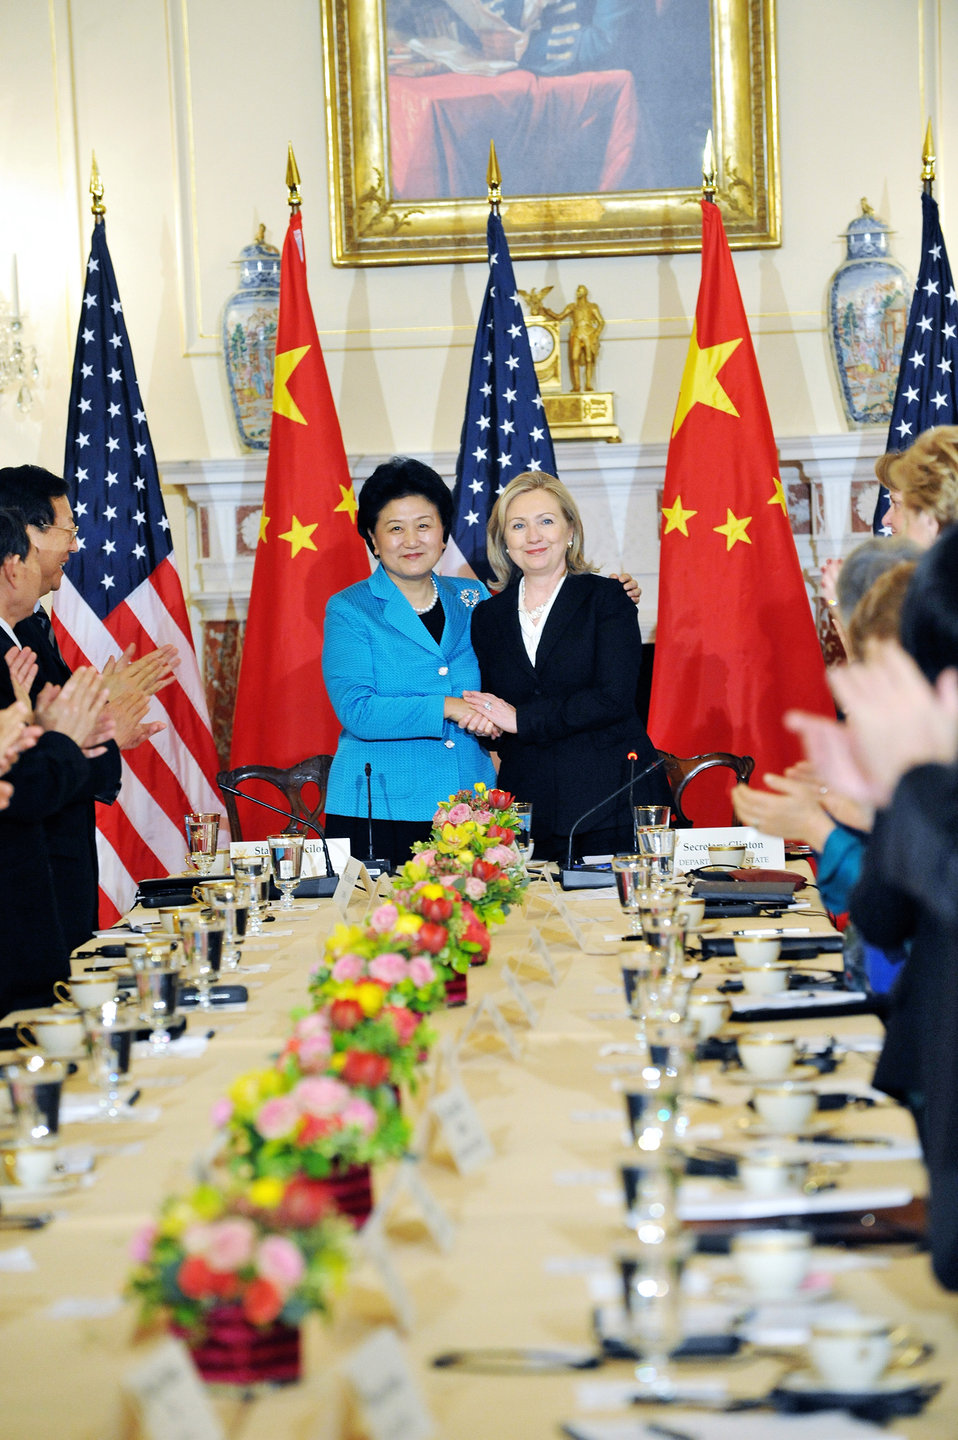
Secretary Clinton Shakes Hands With Chinese State Councilor Liu Yandong

U.S. Secretary of State Hillary Rodham Clinton shakes hands with Chinese State Councilor Liu Yandong at the closing session of the U.S.-China Consultation on People-to-People Exchange, at the U.S. Department of State in Washington, D.C., on April 12, 2011.